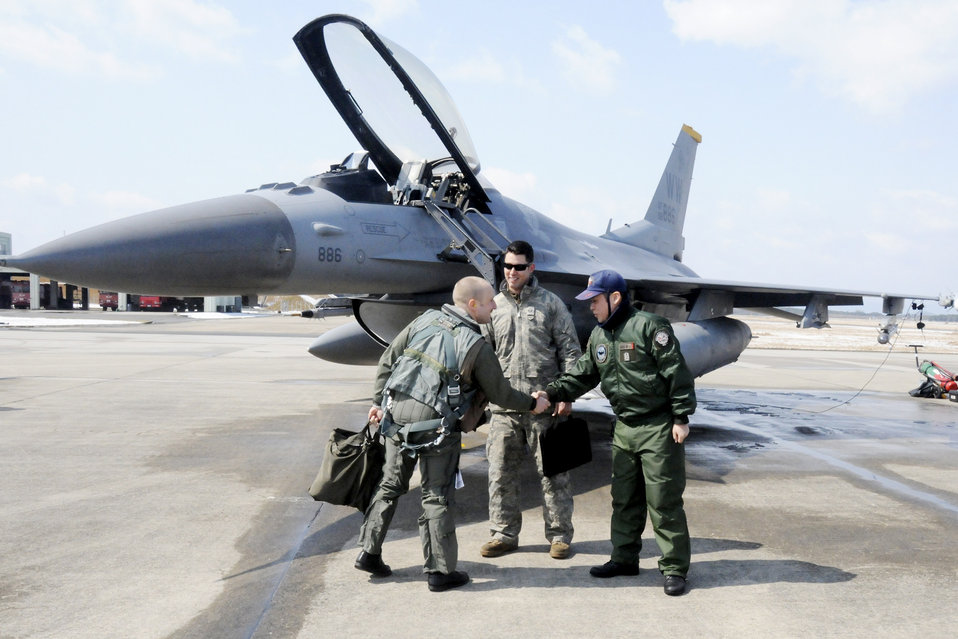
ATR exercise concludes

Capt. Matt Kenkel greets his two crewchiefs, Staff Sgt. Christopher Audet and Japan Air Self-Defense Force Staff Sgt. Yuuta Isoya, prior to taking off for a training mission against JASDF F-15 aircraft during an aviation training relocation exercise March 11, 2010, at Tsuiki Air Base, Japan. Captain Kenkel is a 14th Fighter Squadron pilot.